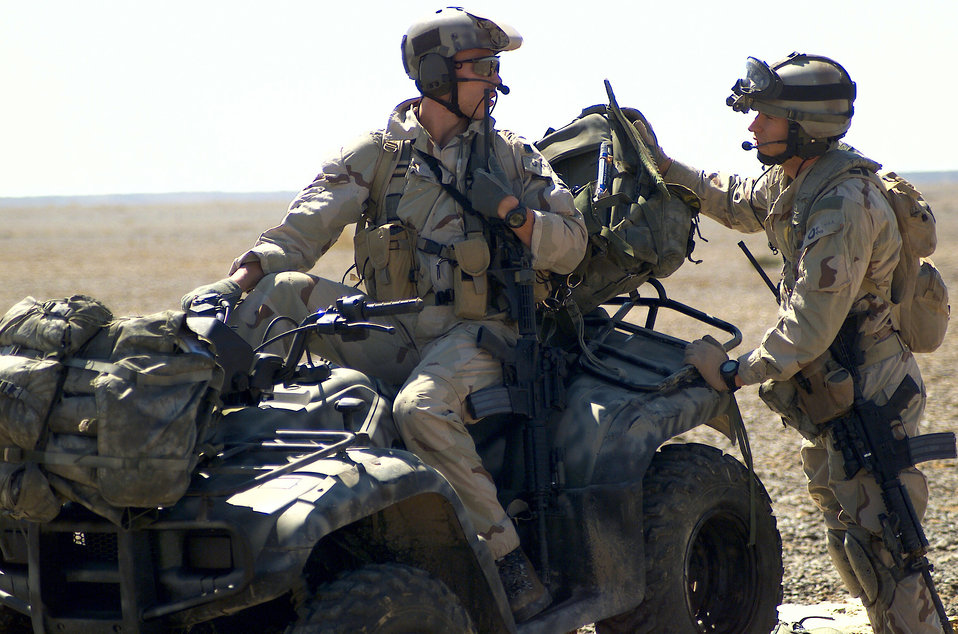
Rugged Arch

SOUTHWEST ASIA -- 410th Air Expeditionary Wing pararescuemen load their ATVs after a practice jump from a C-130 Hercules at a forward deployed location in support of Exercise Rugged Arch, March 8, 2003.